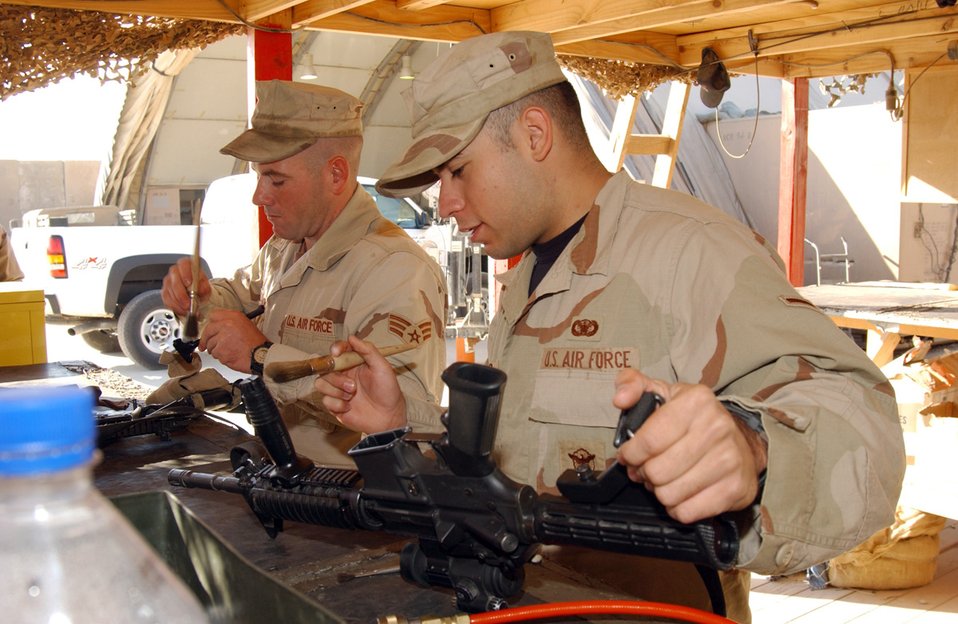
Airmen fill Army billets

BALAD AIR BASE, Iraq (AFPN) -- Airman Dwayne Solis (right) and Senior Airman Derrick Meadors clean their weapons. The Airmen are with the 732nd Expeditionary Logistics Readiness Squadron. The squadron helps provide security escorts for convoy missions leaving the base.